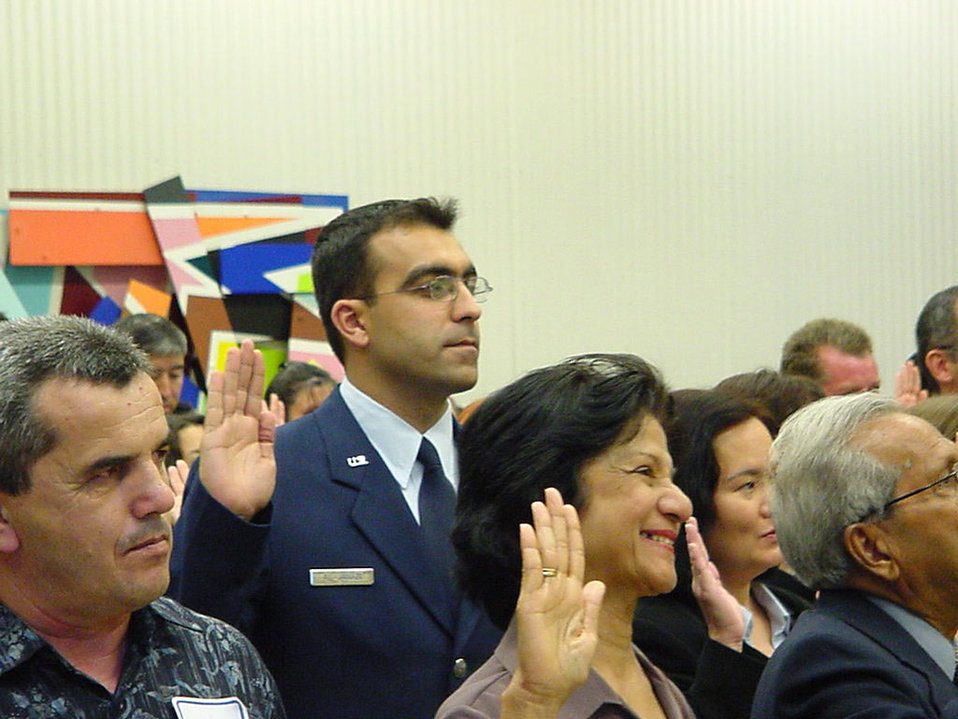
Dental technician becomes U.S. citizen

DAYTON, Ohio -- Airman 1st Class Mohammed Al Janabi swears in as a U.S. citizen during a ceremony held in the federal courthouse here Sept. 16. He was born in Iraq and is a dental technician with the 74th Dental Squadron at nearby Wright-Patterson Air Force Base.